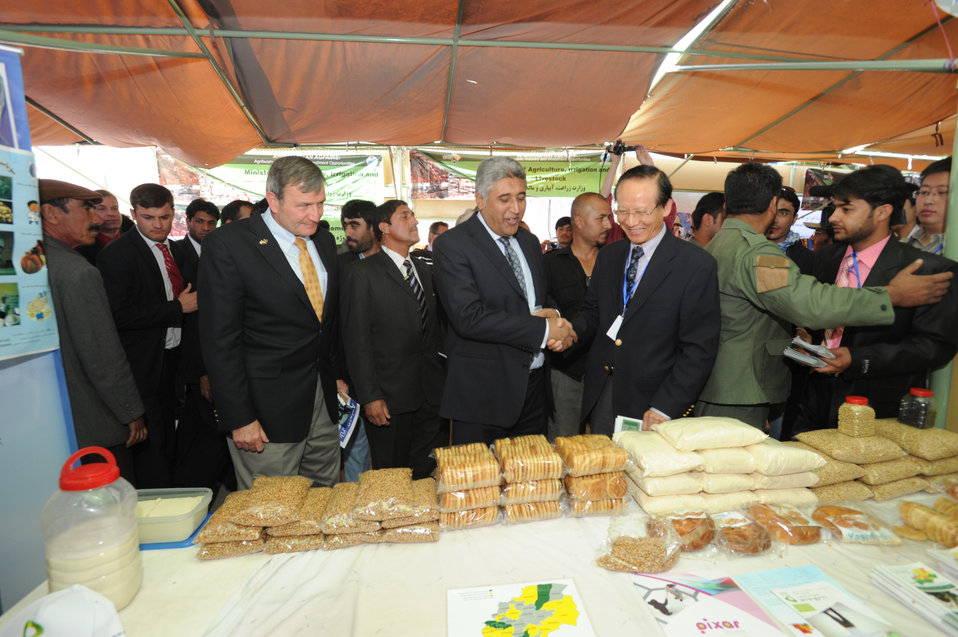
جشنواره زراعتی بین المللی سکتور رشد کننده زراعتی افغانستان را به نمایش گذاشت